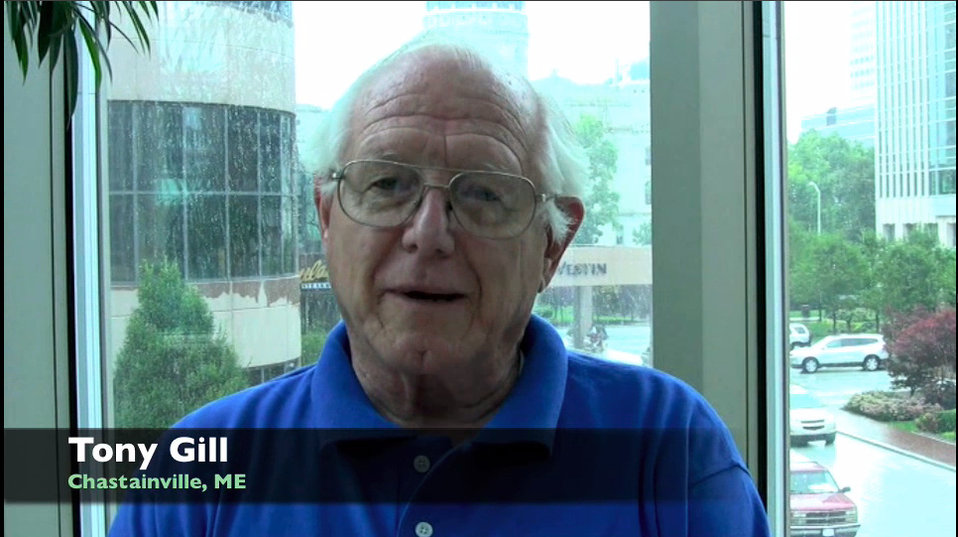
Tony Gill at the National Weatherization Conference

'In my opinion, the greatest benefit to the weatherization program eventually is going to be changing the way America builds.'